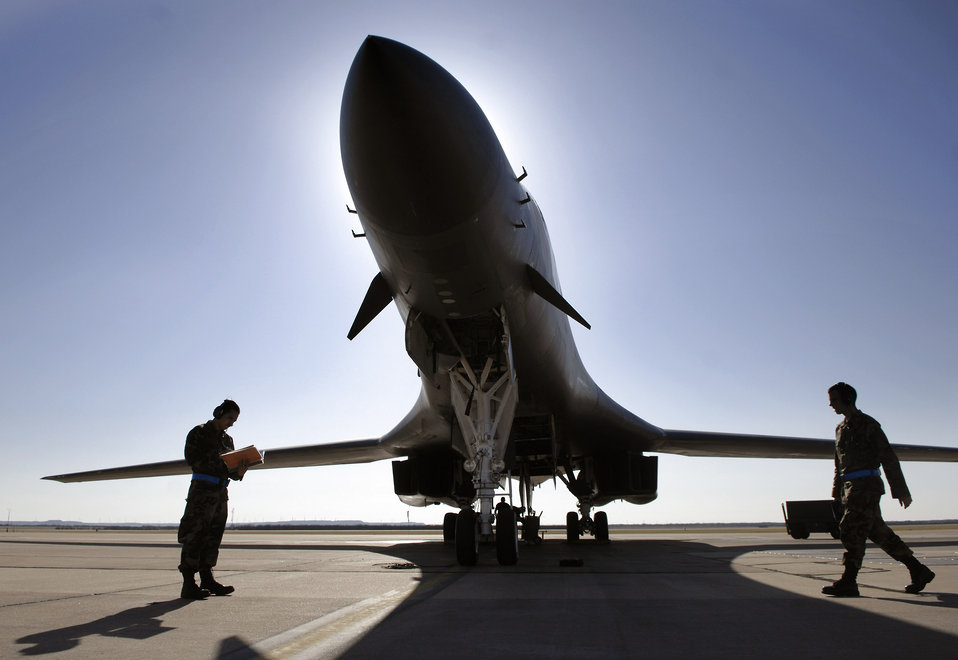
Getting ready to set a record

Senior Airman Hector Gonzalez and Airman 1st Class Jeffery Polllitt conduct an operational check on a B-1B Lancer March 19 at Dyess Air Force Base, Texas, prior to its record-setting supersonic flight using a 50/50 blend of synthetic and petroleum fuel over the White Sands Missile Range airspace in New Mexico.